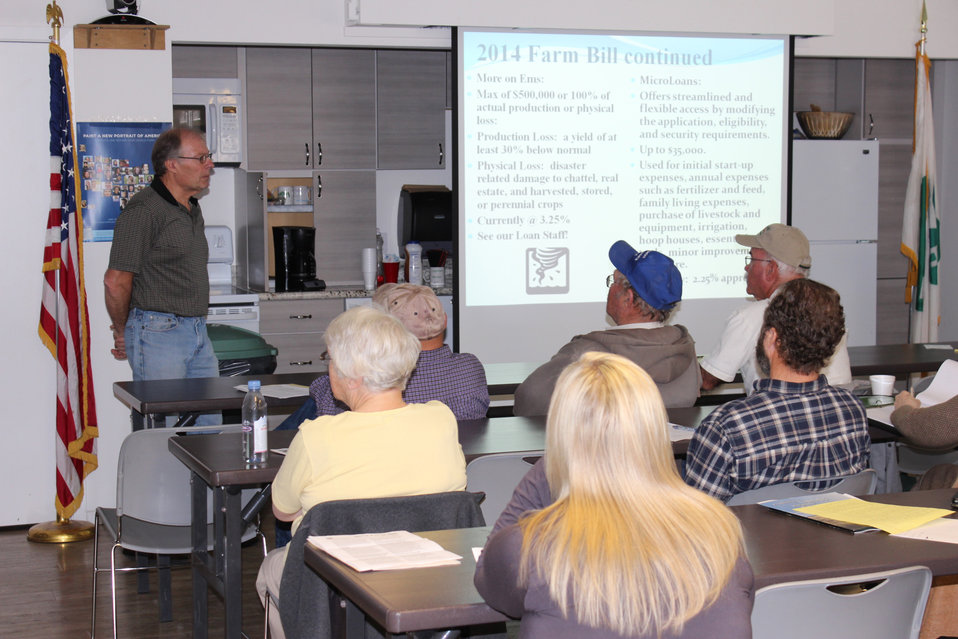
U.S. Department of Agriculture (USDA) Farm Service Agency (FSA) Nevada State Executive Director Clint Koble addresses the public in a Farm Bill Road Show meeting in Gardnerville, NV.